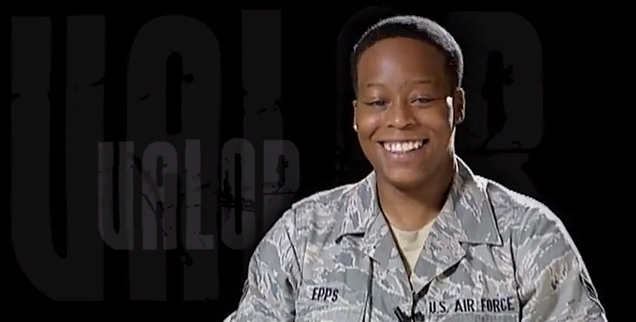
Chanise Epps

Air Force photographer Chanise Epps